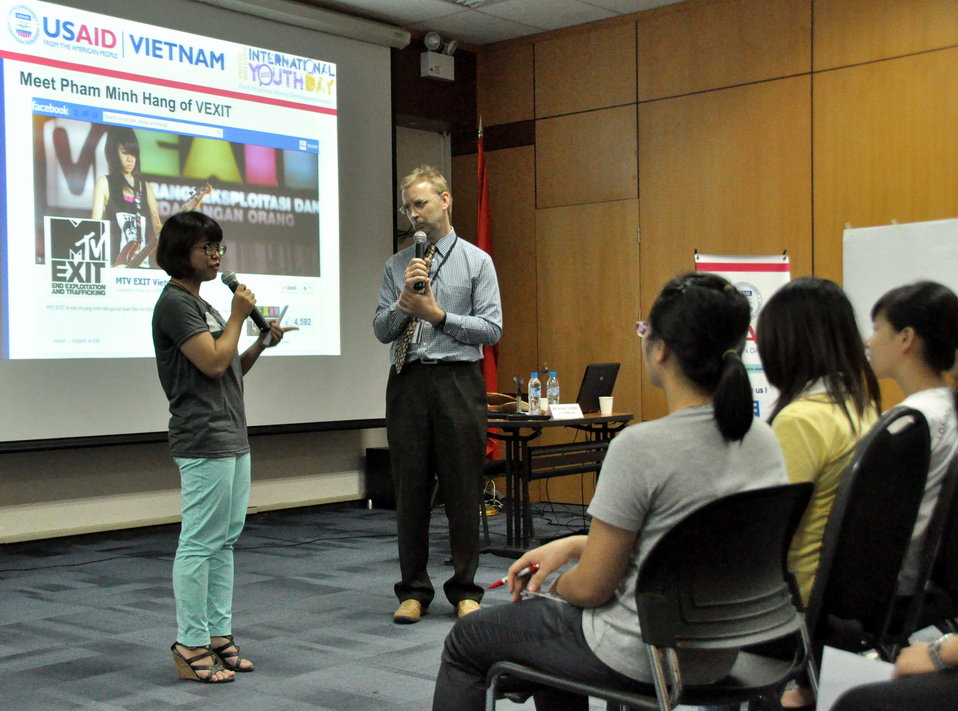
International Youth Day 2013: USAID hosts a lively discussion and group exercise on how youth can join in to advance development

Hanoi, August 12, 2013.